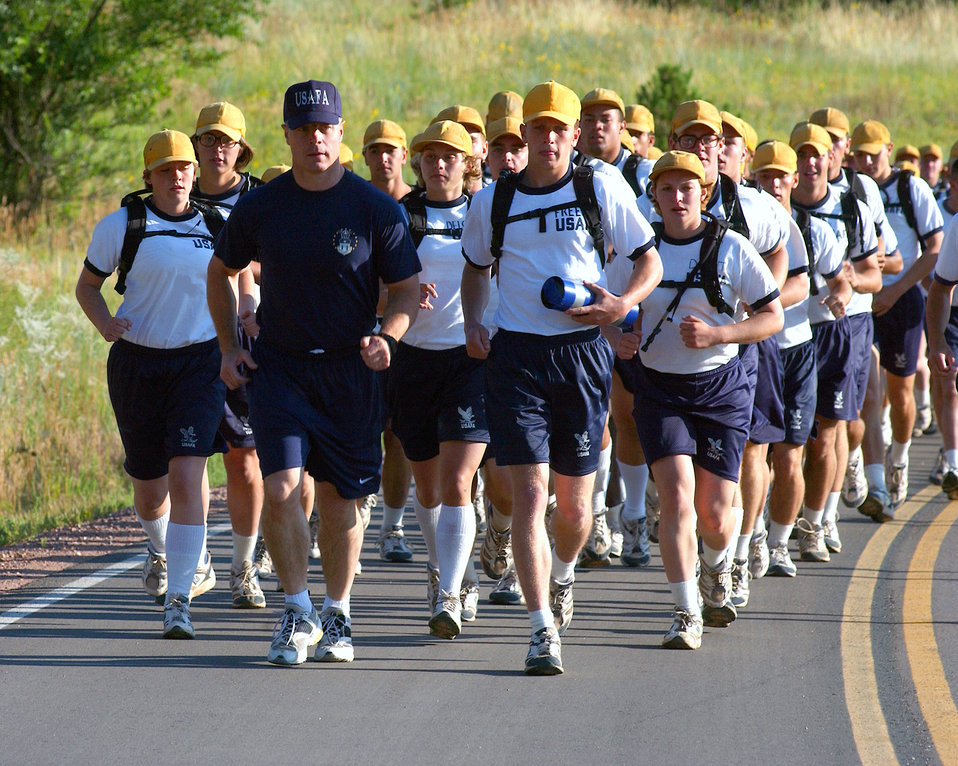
Leader of the pack

U.S. AIR FORCE ACADEMY, Colo. -- Brig. Gen. John Weida, the academy commandant, joined cadets on the first leg of the 35-mile relay Warrior Run on July 30. The run was added to basic cadet training here this year.